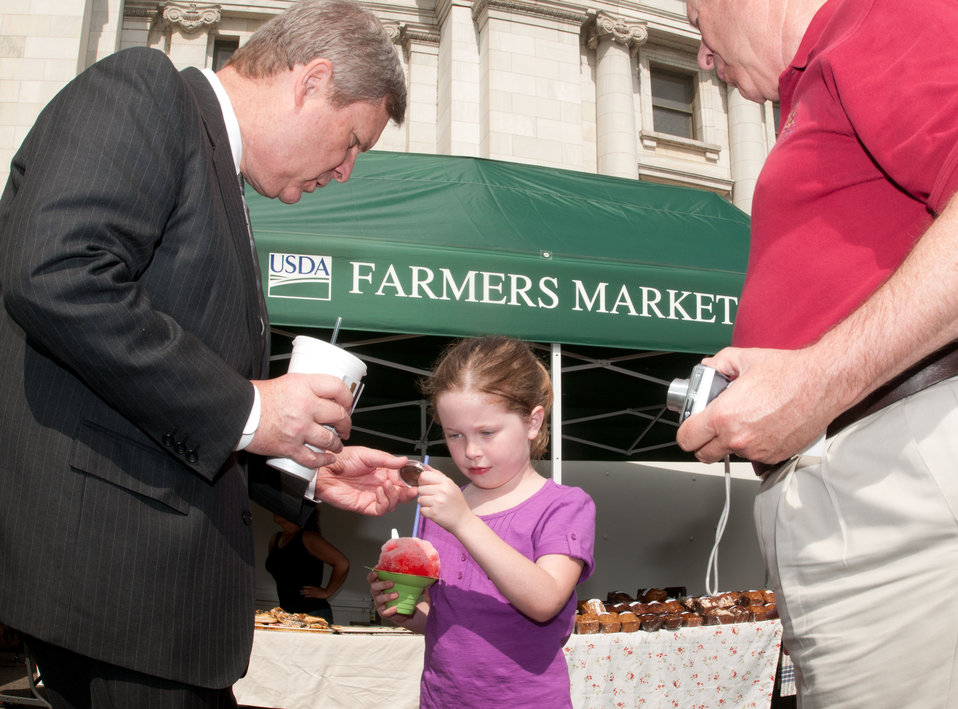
U.S Department of Agriculture (USDA) Secretary Tom Vilsack (left) gave Isabelle Bechtel (center) a USDA Coin she was accompanied by her grandfather, Farm Service Agency Deputy Administrator Philip Short (right) at the USDA Farmers Market on Friday, Jun 3, 2011 in Washington, DC. The outdoor market is located at the corner of 12th Street and Independence Avenue and will be open every Friday from 10:00 a.m. - 2:00 p.m. through November 18th. Special events will be happening every Friday at the market and at the adjacent People's Garden all season.